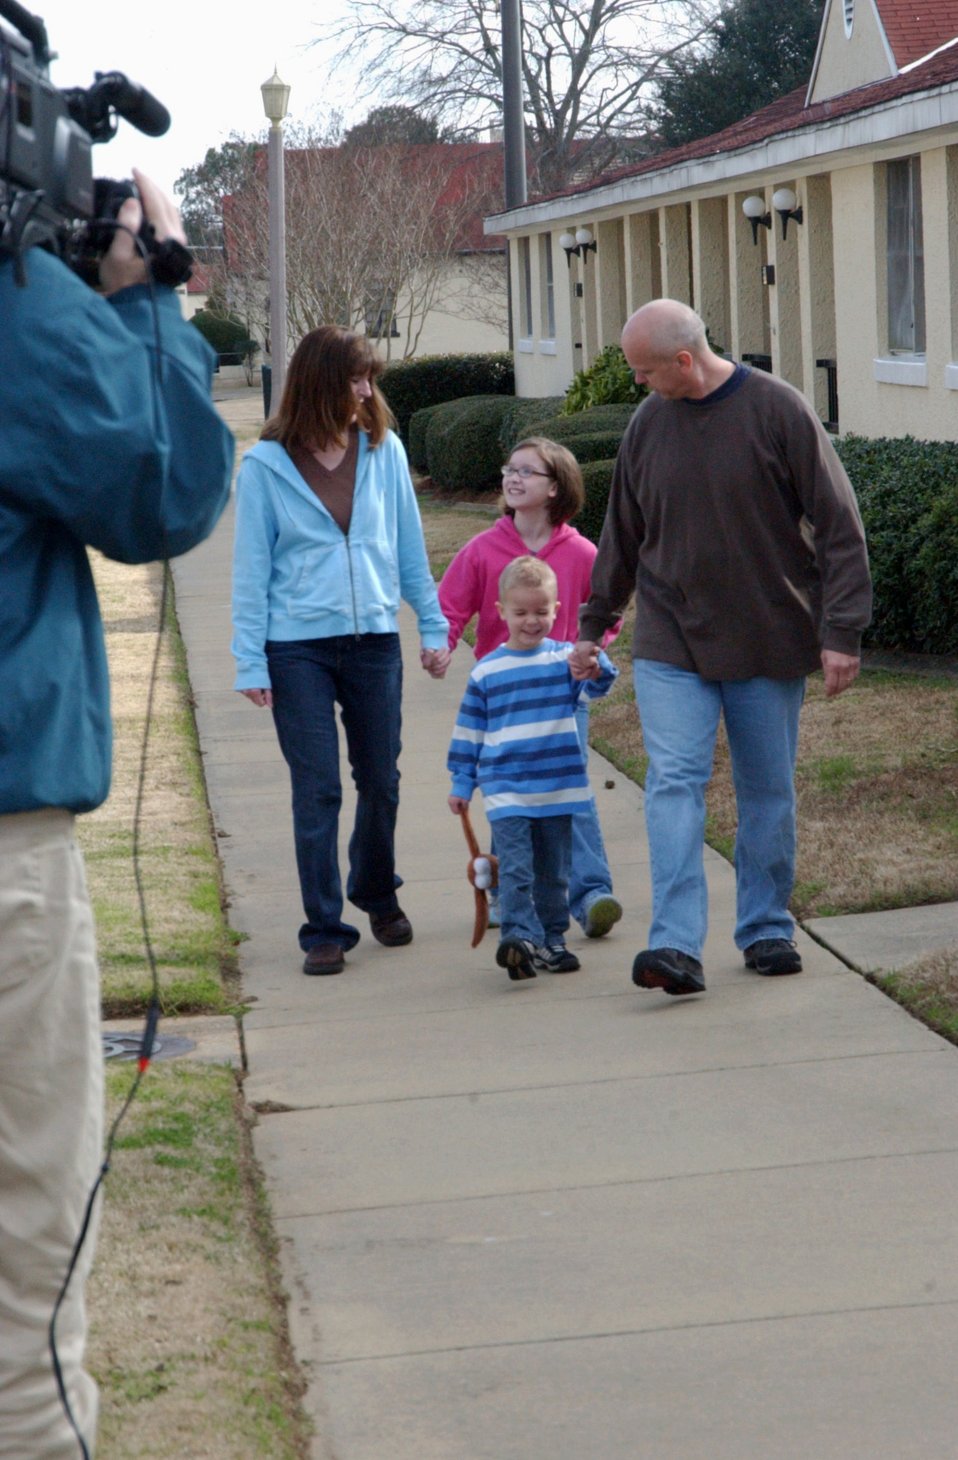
House hunters

MAXWELL AIR FORCE BASE, Ala. (AFPN) --